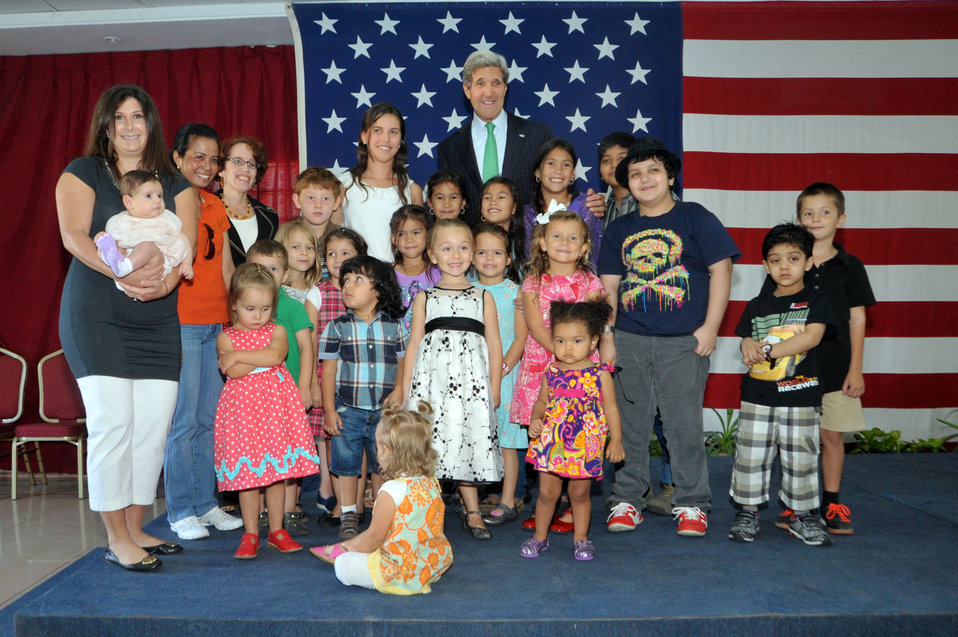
Secretary Kerry Poses for a Photo With the Children of Consulate General Jeddah Staff

U.S. Secretary of State John Kerry poses for a photo with children of staff at the U.S. Consulate General in Jeddah, Saudi Arabia, on June 25, 2013.